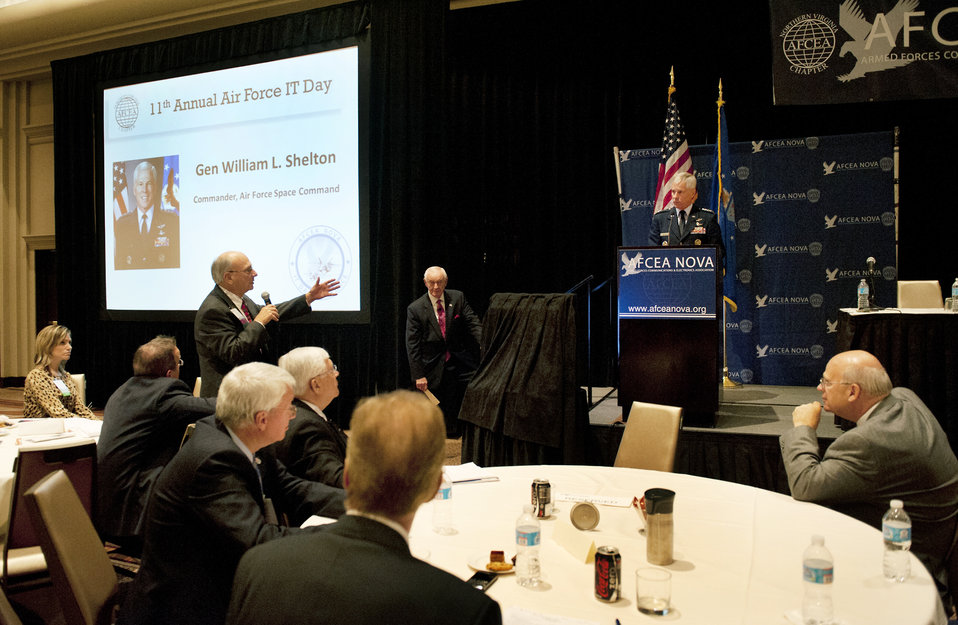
Gen. Shelton speaks to IT conference

Gen. William L. Shelton, center, commander of the Air Force Space Command, listens as an attendee asks a question during the 11th Annual Air Force IT Day at Tyson's Corner, Va., Oct. 11, 2012. The event is an anual one-day conference focused on issues and challenges facing the future Air Force.